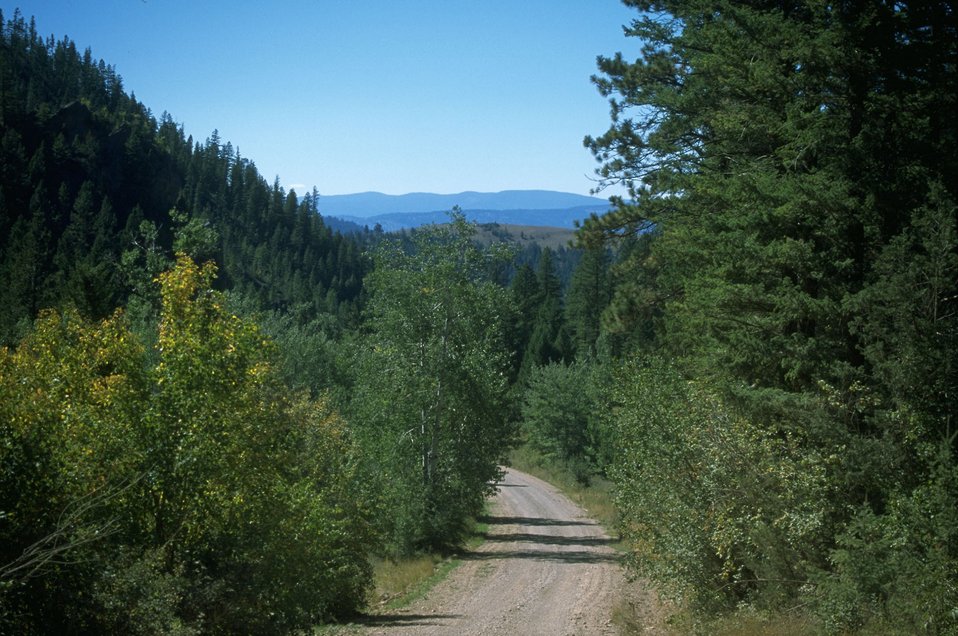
Bear Gulch--scenic view from road